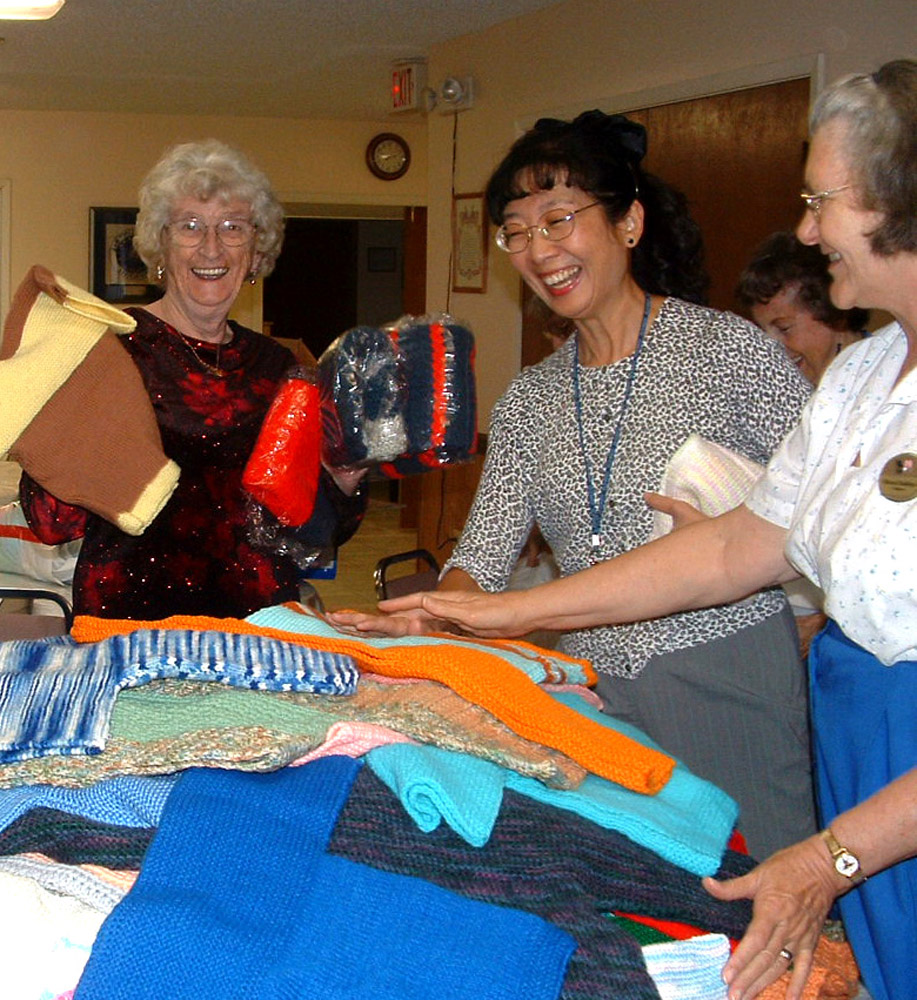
Air Force Enlisted Village helps all service widows

Janet Mosier, center, helps pack children?s sweaters made by residents of the Air Force Enlisted Village. Janet is one of several Navy, Army, Coast Guard and Marine widows who lives at the Air Force Enlisted Village.